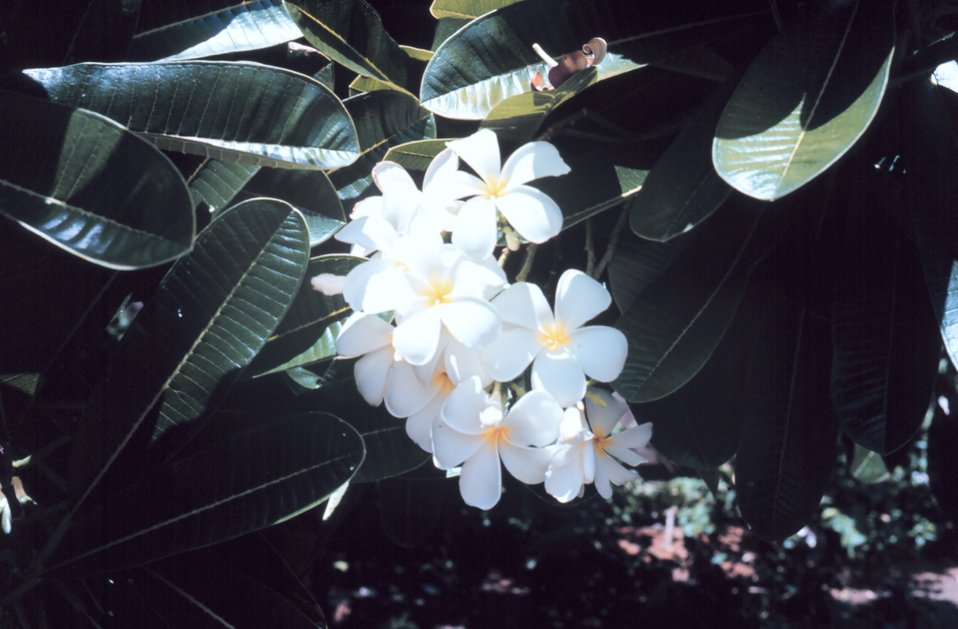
Hawaiian flowers